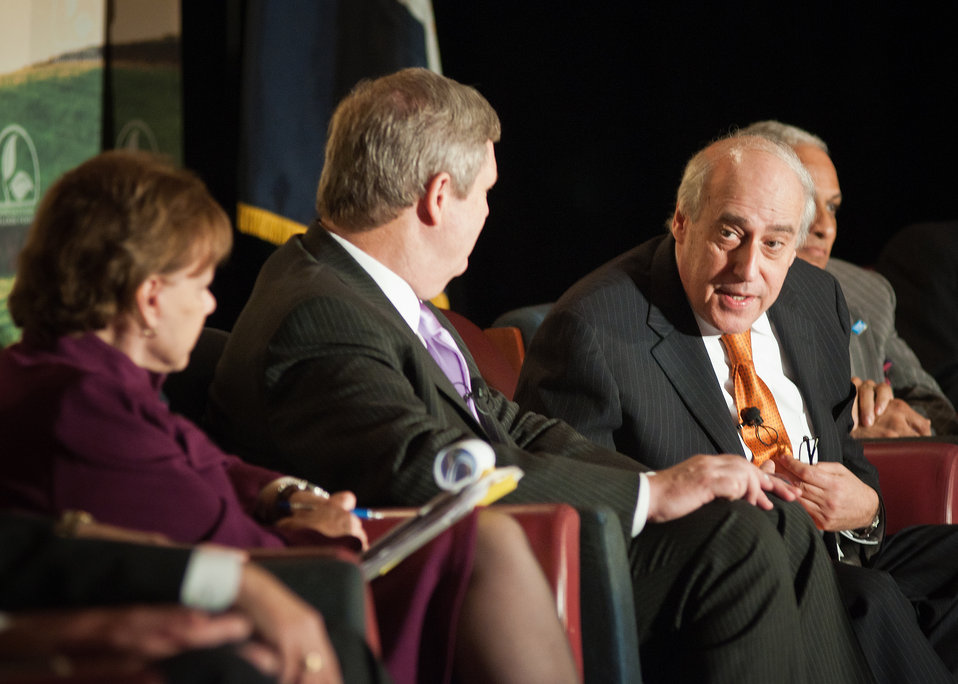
At the 2012 Agricultural Outlook Forum, “Moving Agriculture Forward” in Arlington, VA, held on Thursday, February 23, 2012, 7 former Secretaries of Agriculture sat on the plenary panel “Visions of the Future” hosted by current Agriculture Secretary Tom Vilsack. Congressman Dan Glickman (KS) speaks to former Secretary Ann Veneman and Senator Mike Johanns (NE) during the panel discussions.